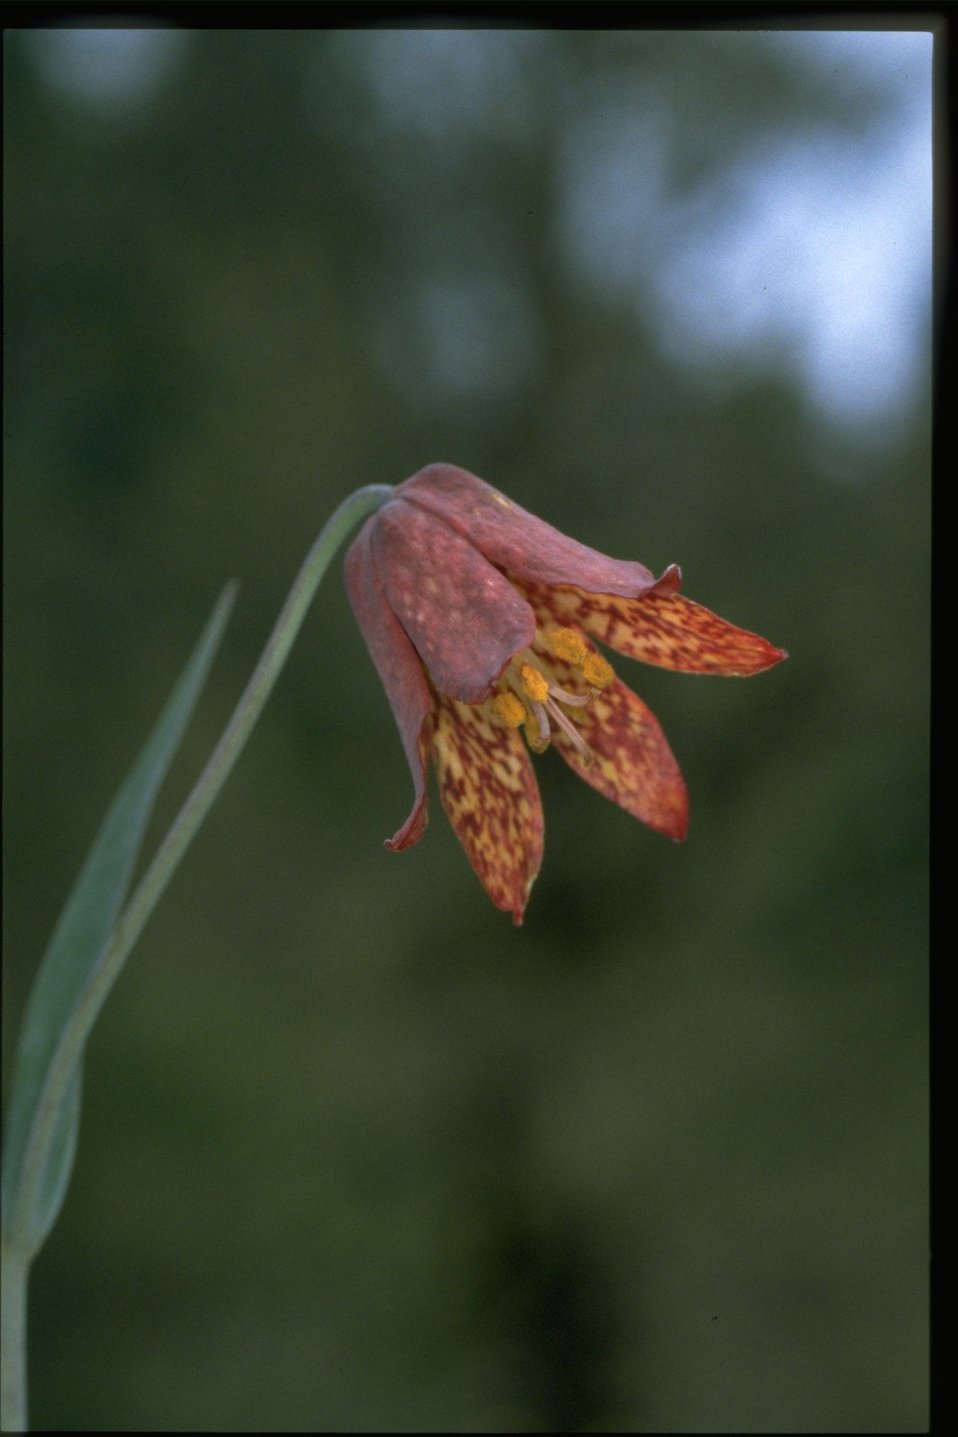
Closeup shot of Gentner's Fritillary, Fritillaria gentneri.